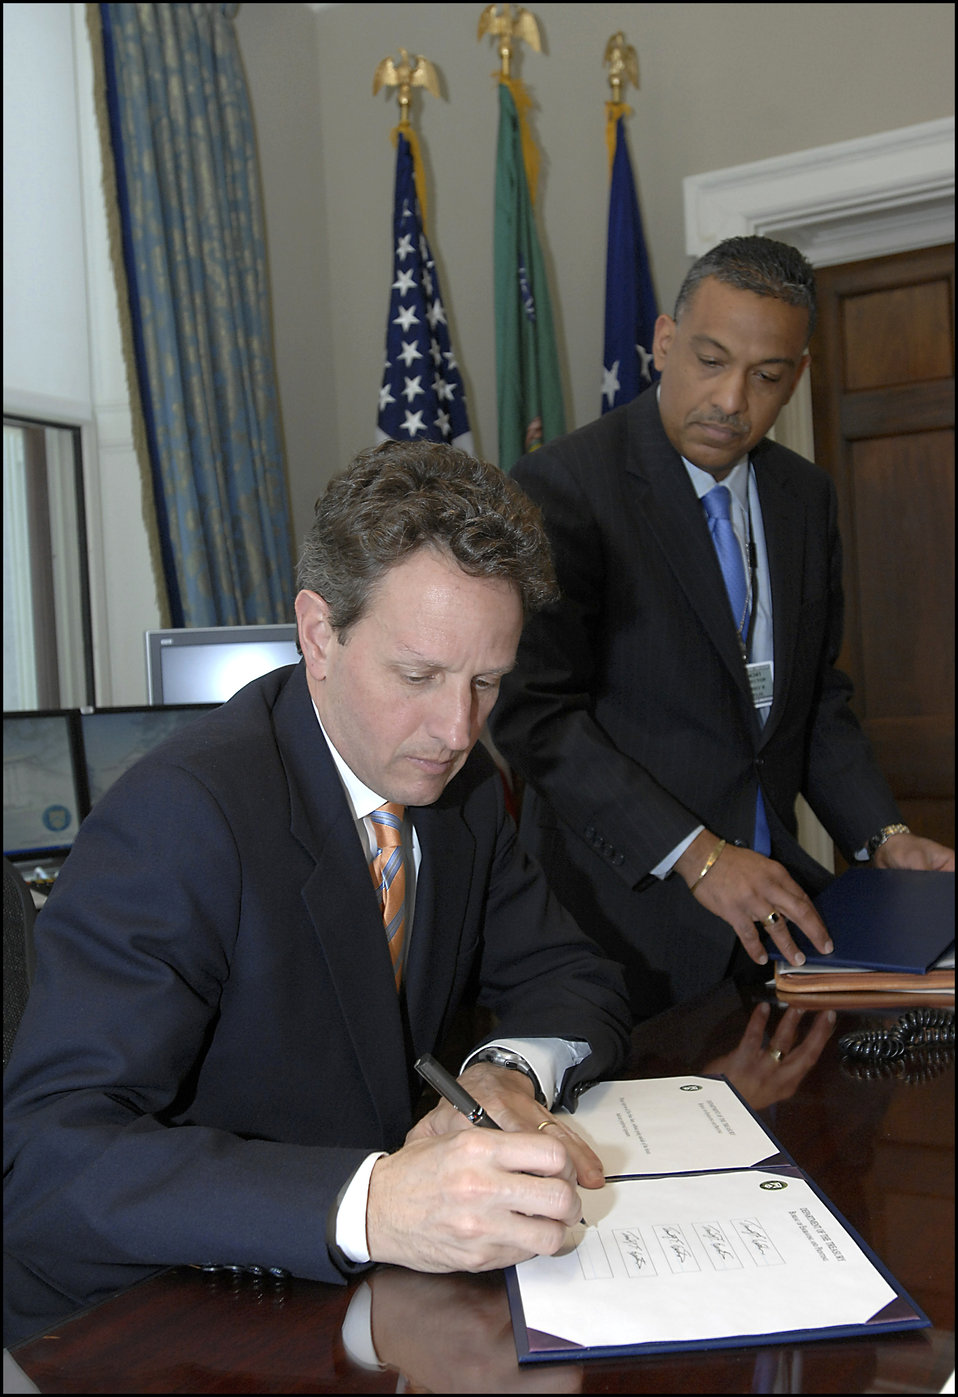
Geithner Signing